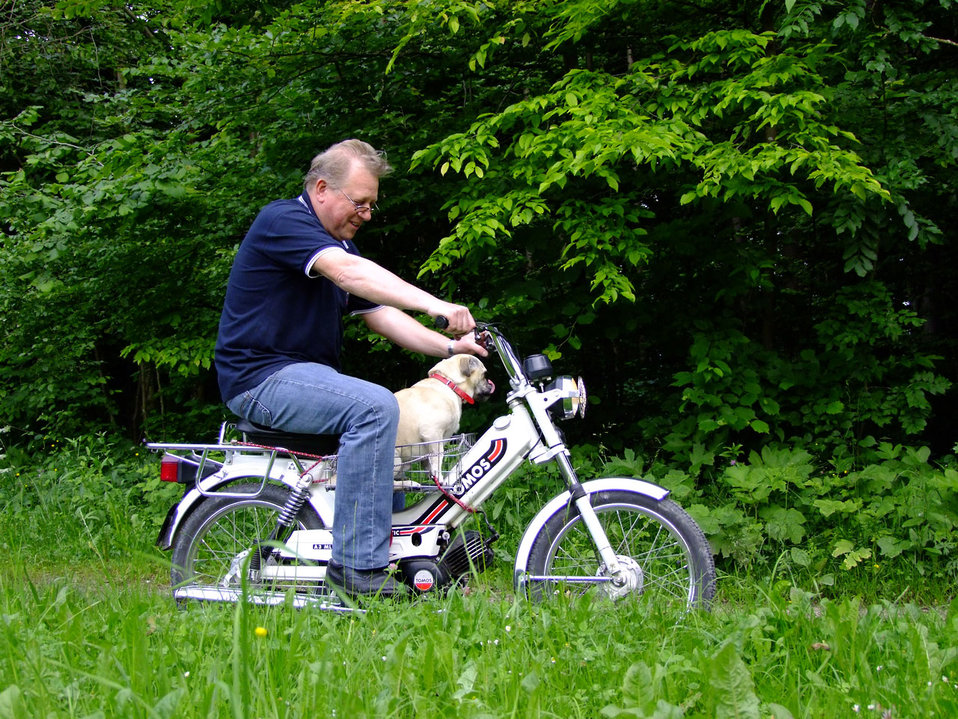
Faster

This dog really enjoy his master drive in nature.